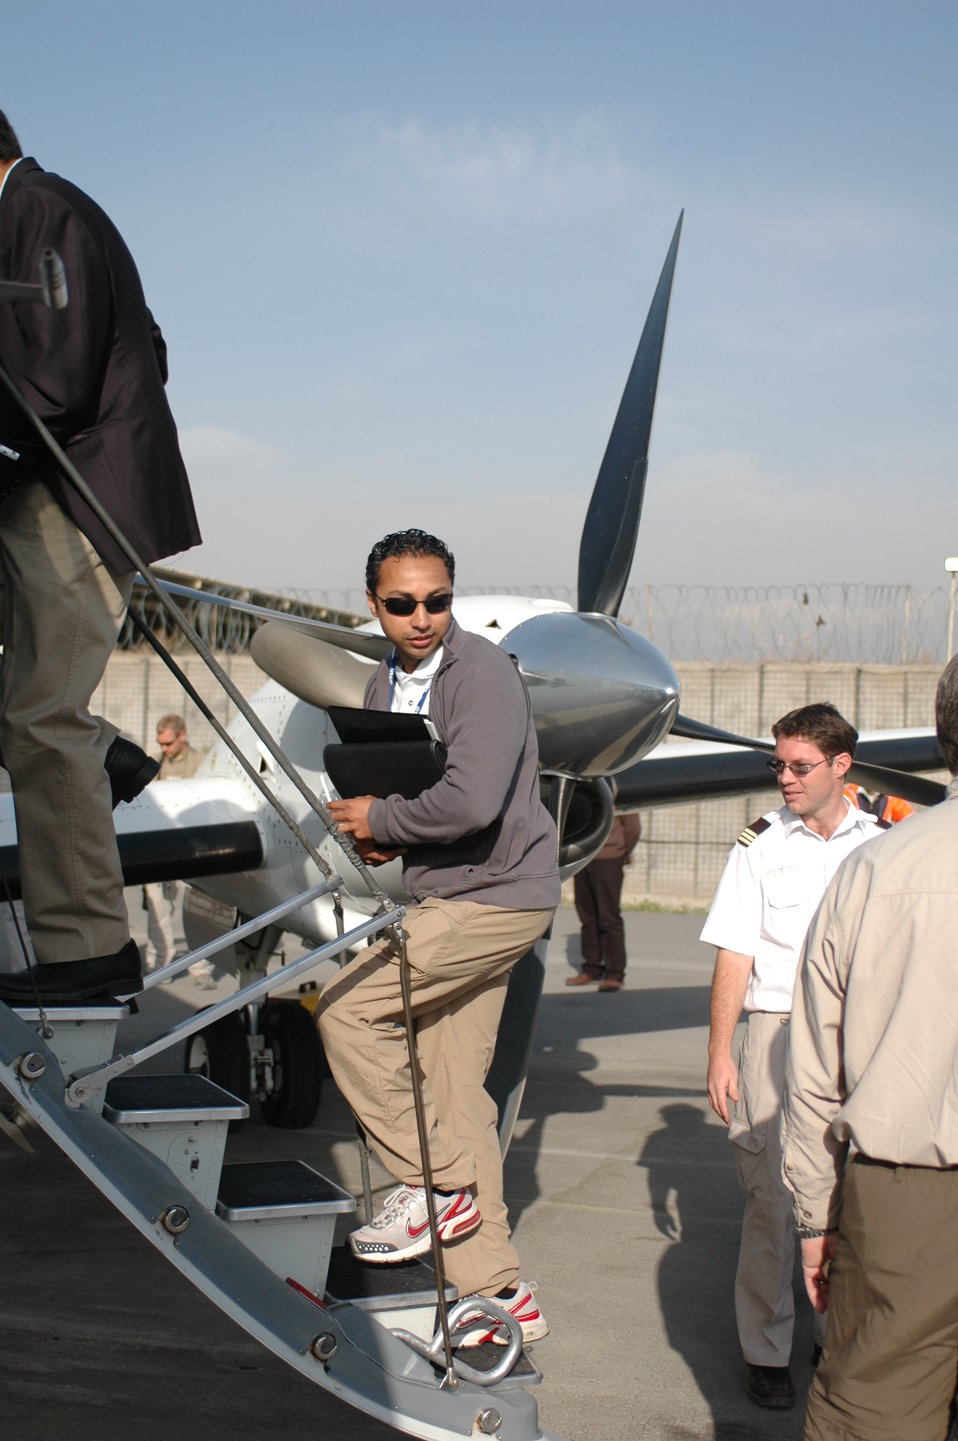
Dr Shah Visits Argandab April 10, 2010